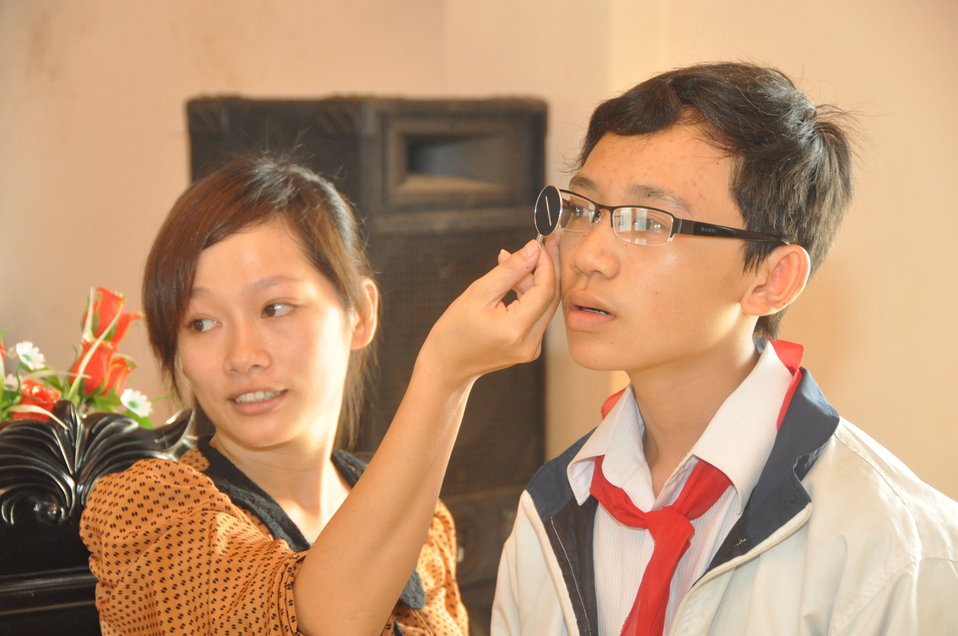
School children in Dak To, Kon Tum Province, receive eyeglasses under a program supported by USAID and partners HKI and World Learning